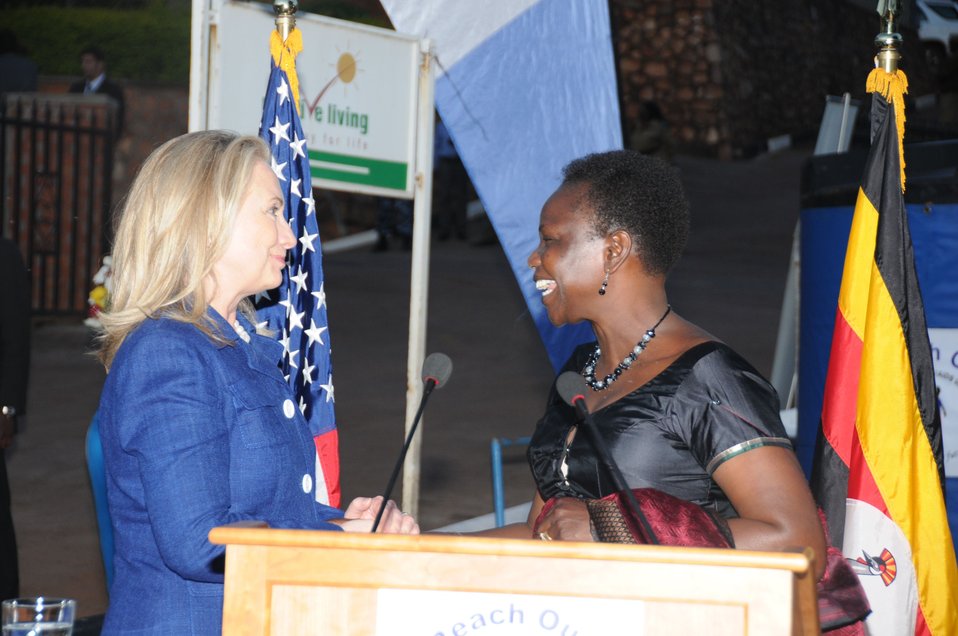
Secretary Clinton Greets Ugandan Minister of Health Dr. Ondoa

U.S. Secretary of State Hillary Rodham Clinton greets Ugandan Minister of Health Dr. Christine Ondoa at Reach Out Mbuya—a PEPFAR-supported faith-based organization and health clinic in Kampala, Uganda on August 3, 2012.